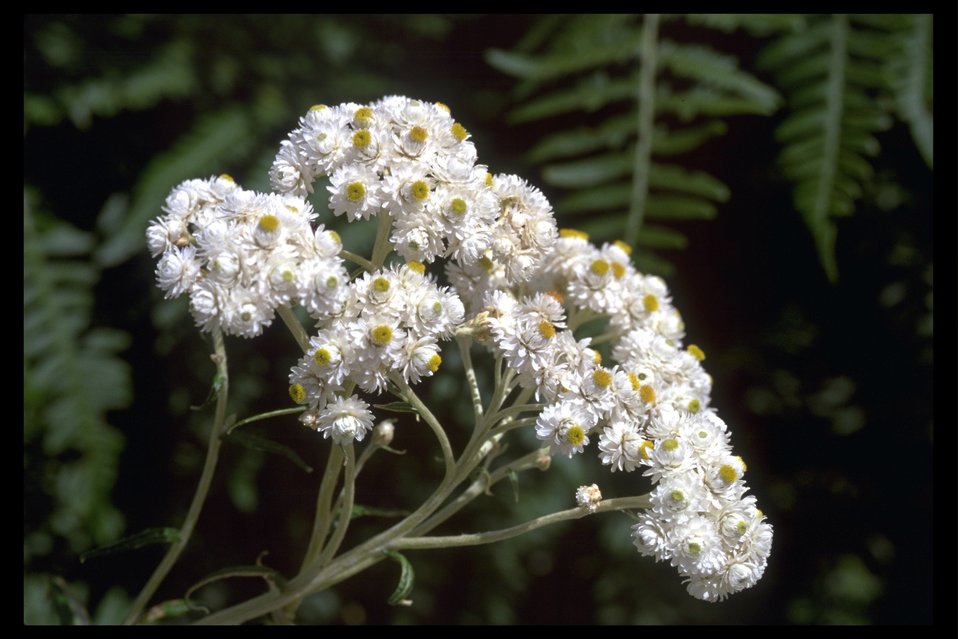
Pearly Everlasting (Anaphalis margaritacea) at Upper Trail Creek.